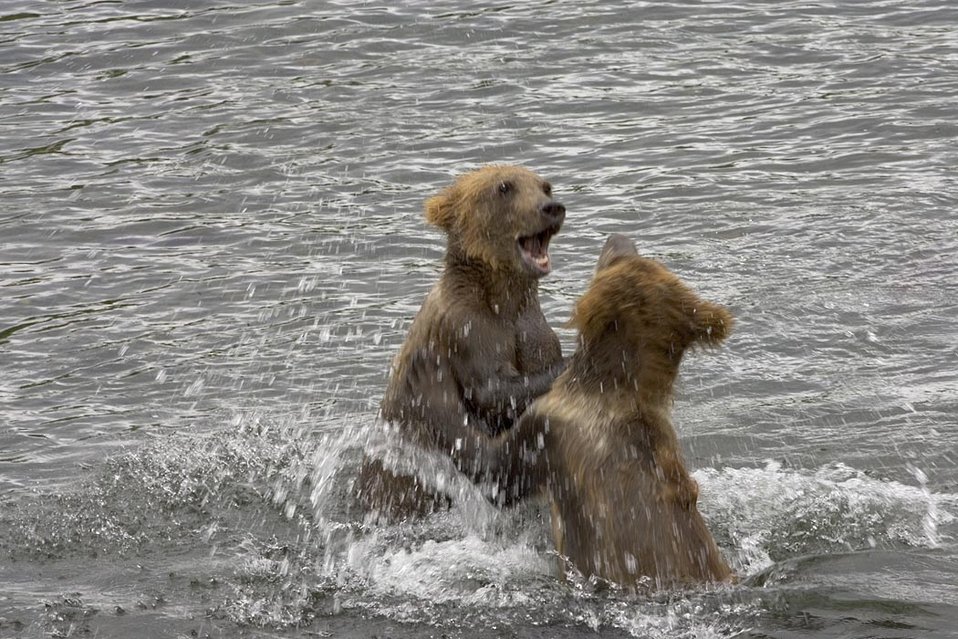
Brown bear cubs playing in water

This image taken at the Frazer Lake weir. Frazer Lake weir consists of a series of